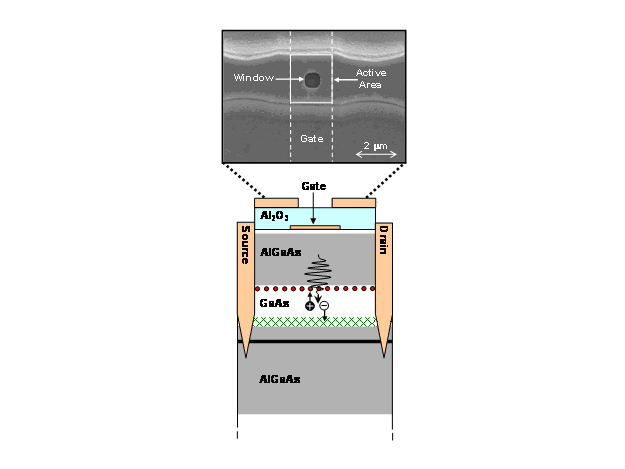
New Quantum Dot Transistor Counts Individual Photons

NIST's modified field-effect transistor can count single photons, or particles of light. When light enters through the transmission window (see electron micrograph of top of device), it penetrates the gallium arsenide absorbing layer and separates electrons from the 'holes' they formerly occupied. Quantum dots (red dots) trap the positively charged holes, while electrons flow into the channel (green Xs). By measuring the channel current, researchers can determine the number of photons absorbed.